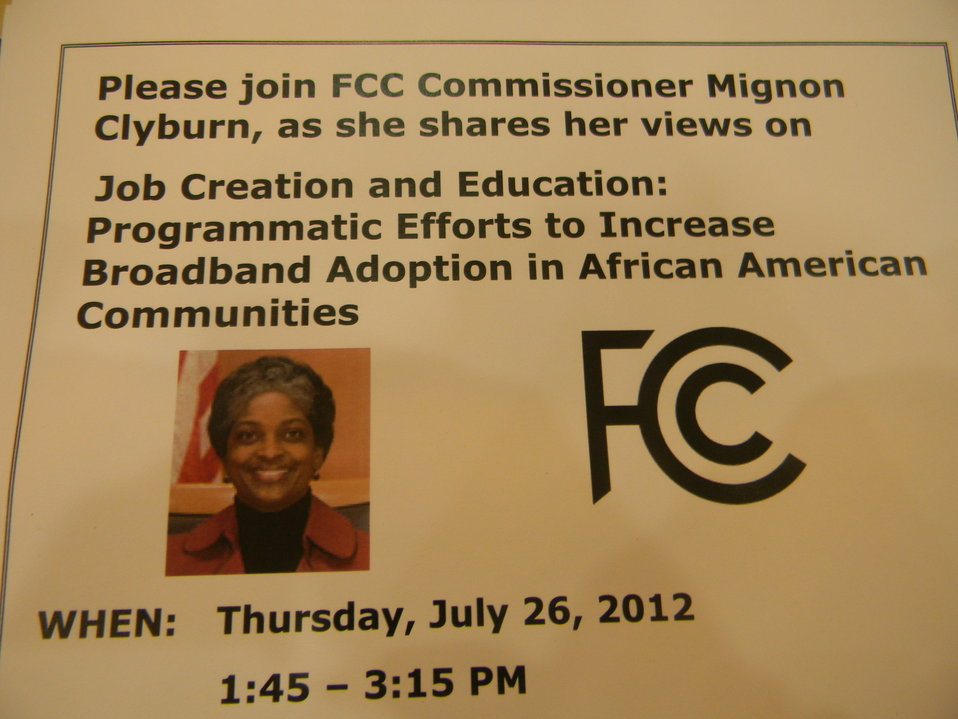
2012 National Urban League Conference

Invitation to see Commissioner Clyburn & several others on the Job Creation and Education: Programmatic Efforts to Increase Broadband Adoption in African American Communities panel.